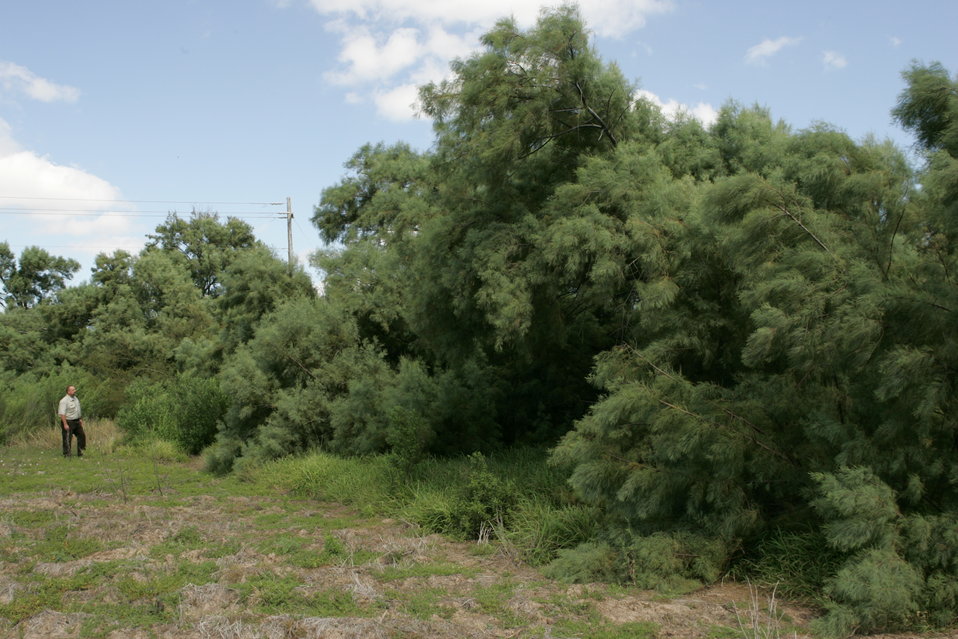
salt cedar

A U.S. Fish and Wildlife Service employee inspects Salt Cedar at Laguna Atascosa National Wildlife Refuge in Texas.